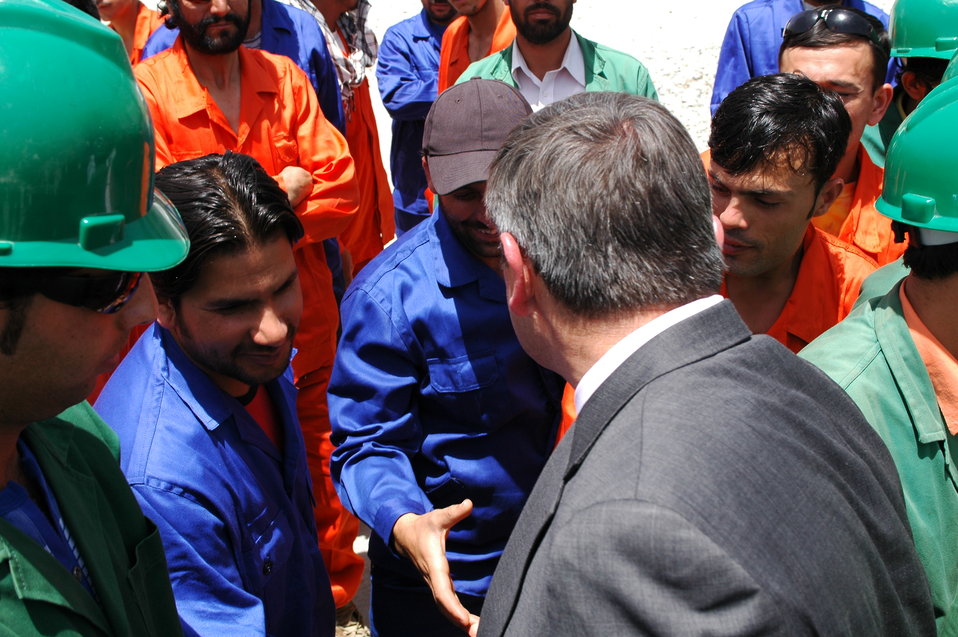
105 MW Tarakhil Power Plant Handover